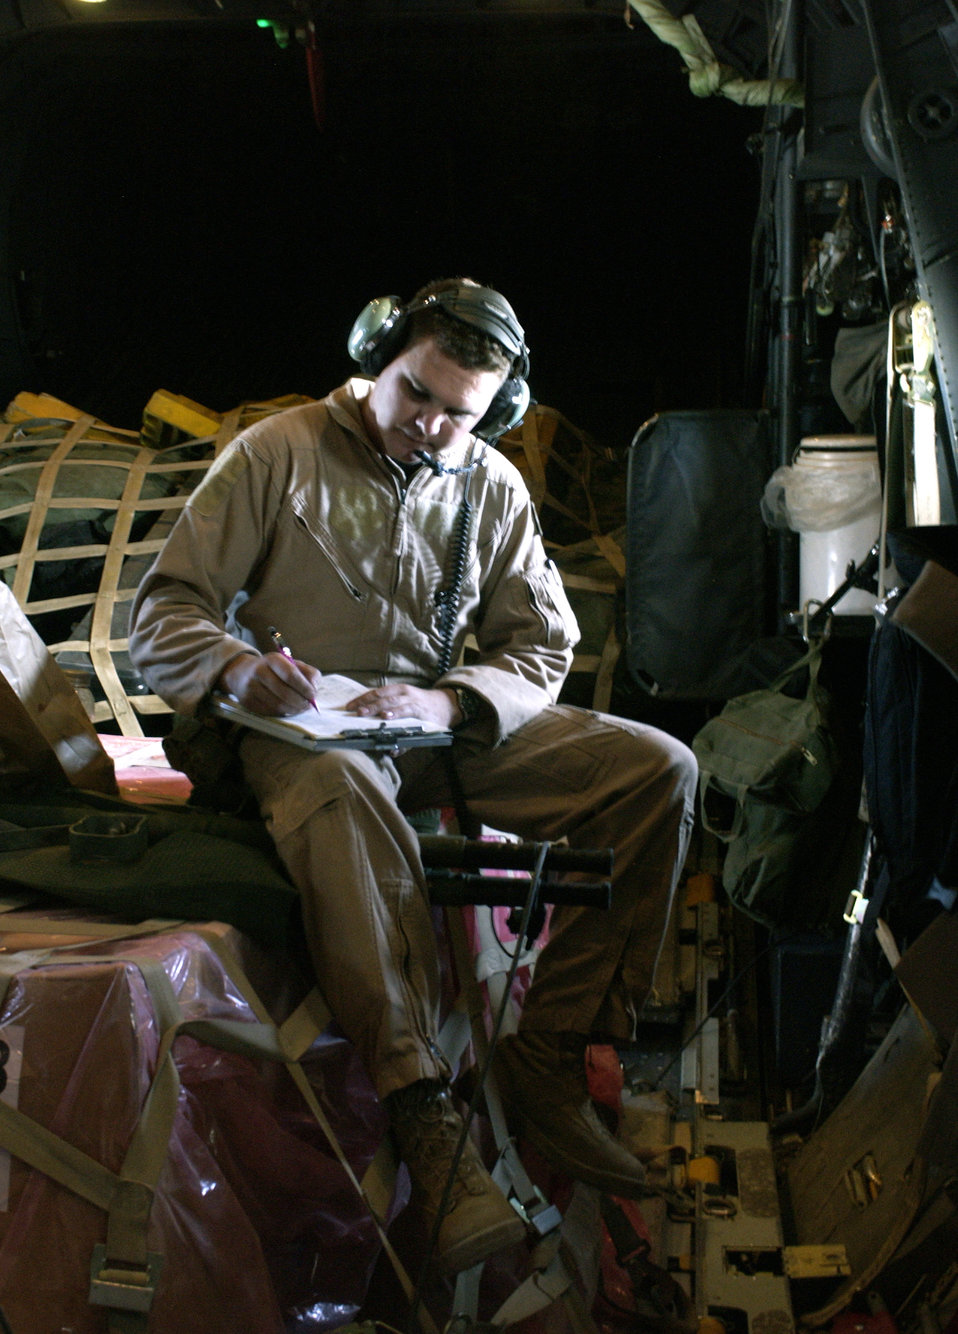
Weigh in

OVER SOUTHWEST ASIA -- Staff Sgt. Jeff Nighbert calculates cargo and passenger weight during a combat mission here Dec. 1. The C-130 Hercules is supporting both operations Iraqi Freedom and Enduring Freedom. Sergeant Nighbert is a C-130 Hercules loadmaster assigned to the 379th Air Expeditionary Wing.